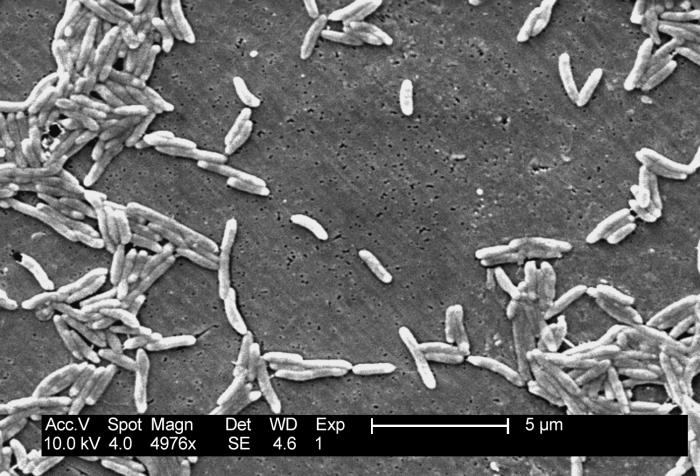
This scanning electron micrograph depicts a grouping of Gram-negative Campylobacter fetus bacteria, magnified 4,976x.